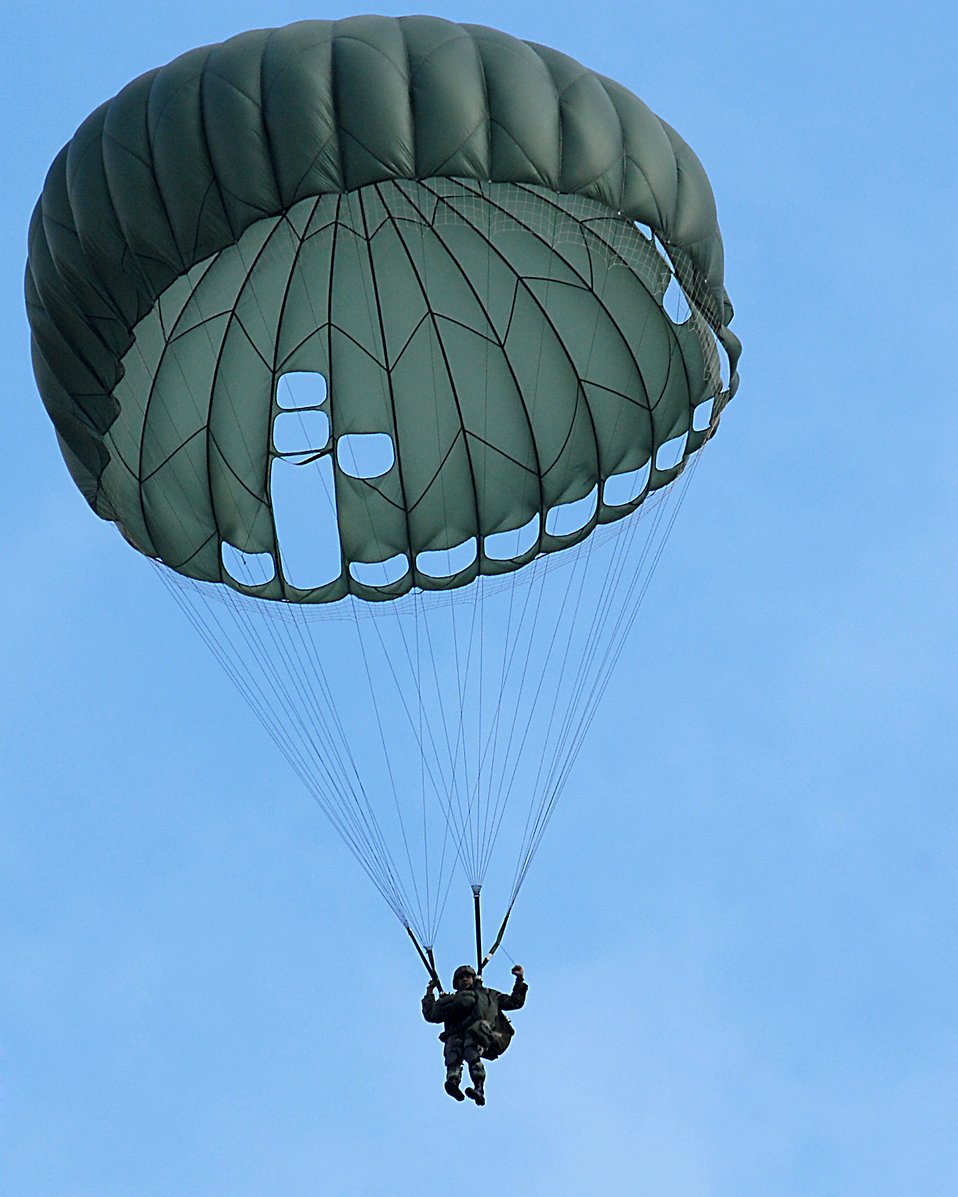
Airborne over Deutschland

An Airman of the 786th Security Forces from Sembach Annex, Germany parachutes down March 8 during a tactical training exercise over southwestern Germany.